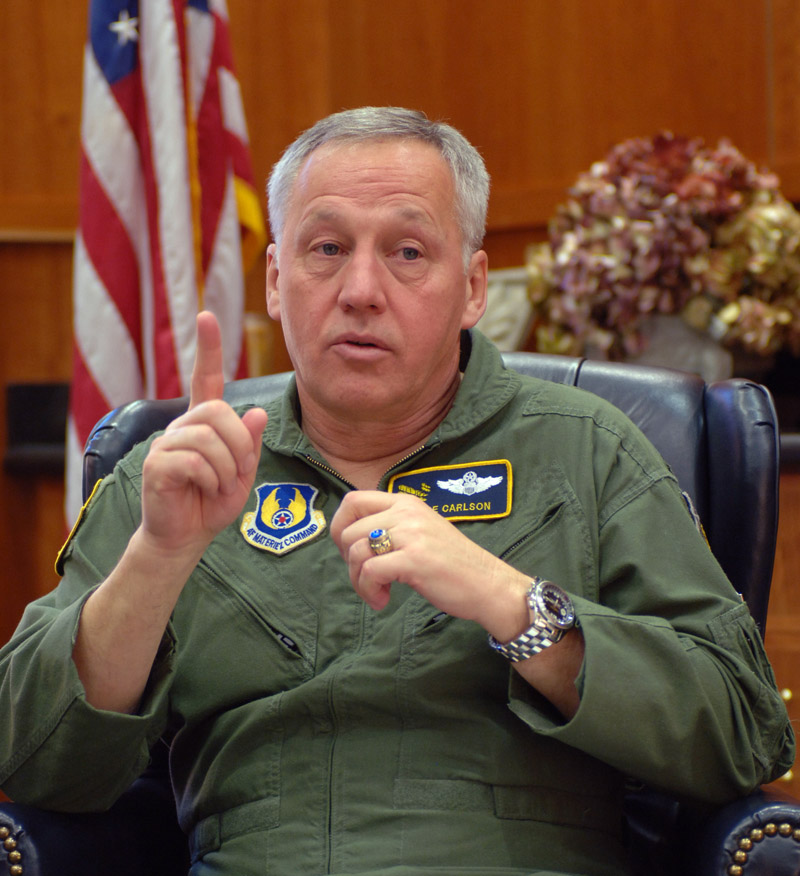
Replace aging aircraft or risk irrelevancy, general says

Gen. Bruce Carlson, commander of Air Force Materiel Command, says he will work to